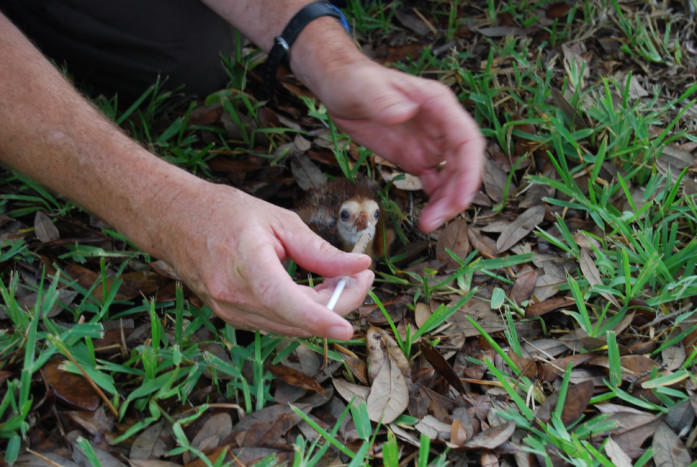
hand-feeding a chick

endangered Mississippi sandhill crane chick
Mississippi Sandhill Crane National Wildlife Refuge, MS